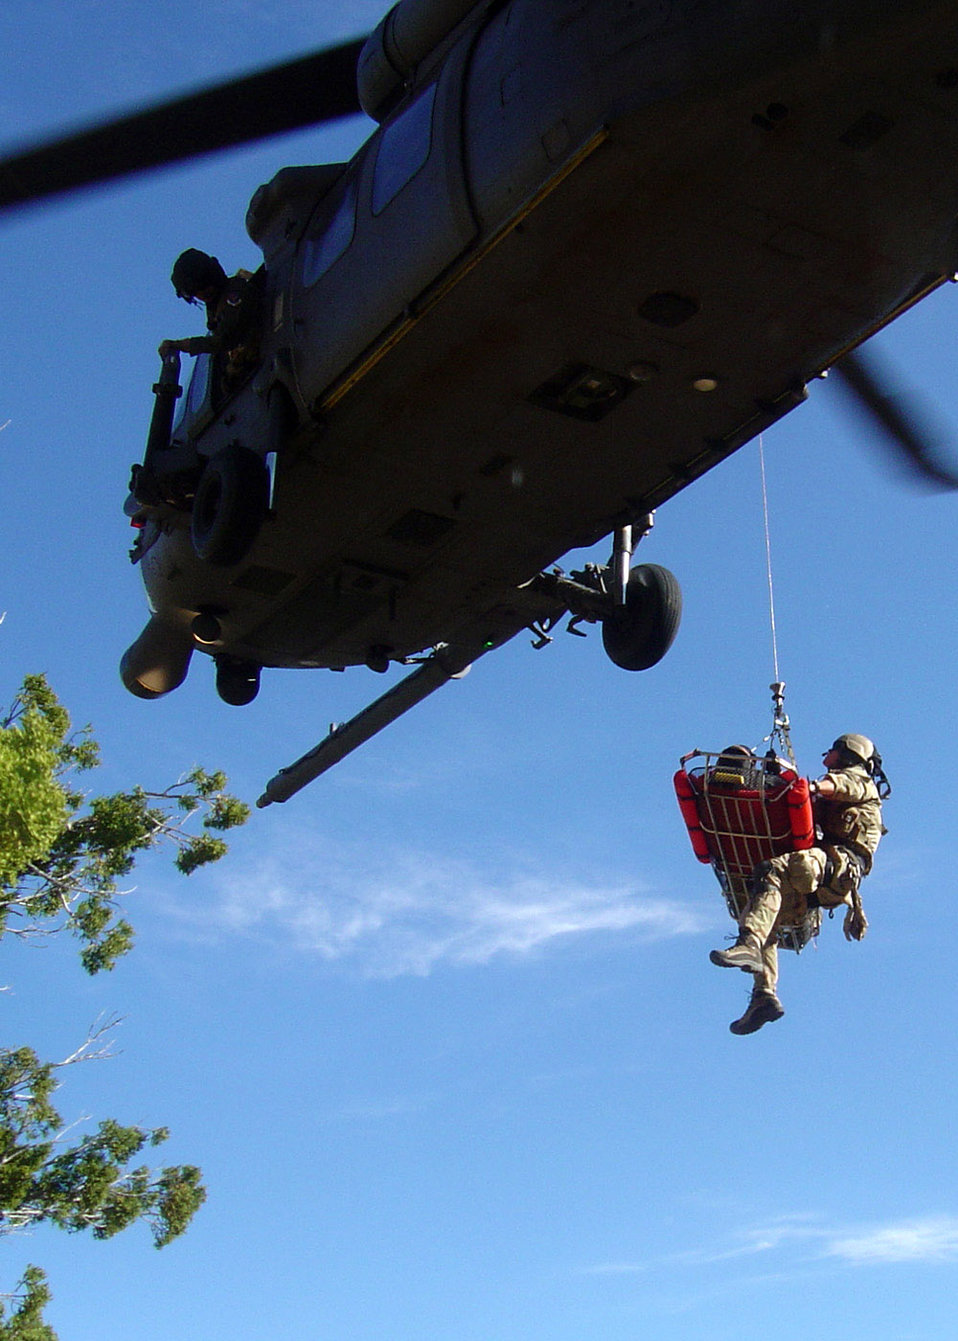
Business is picking up

A 48th Rescue Squadron pararescuman and an